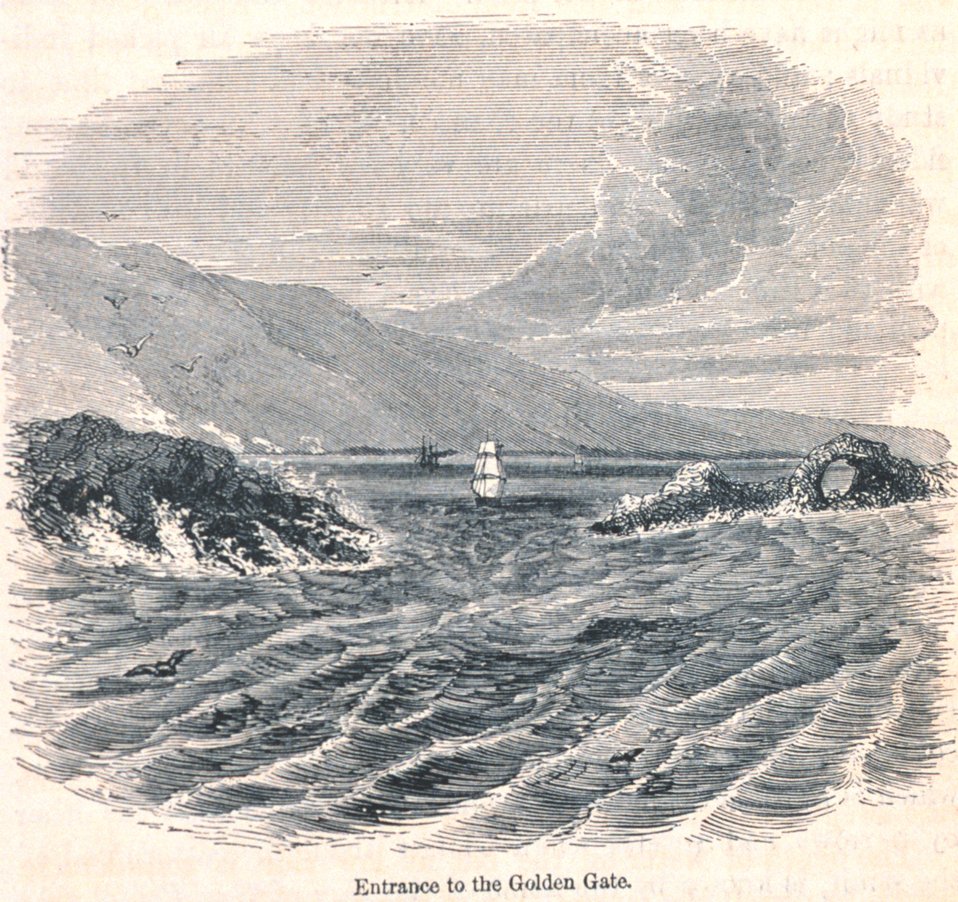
View of the entrance to the Golden Gate. In: 'The Annals of San Francisco'. Frank Soule, John Gihon, and James Nesbit. 1855. Page 151. D. Appleton & Company, New York. F869.S3.S7 1855.